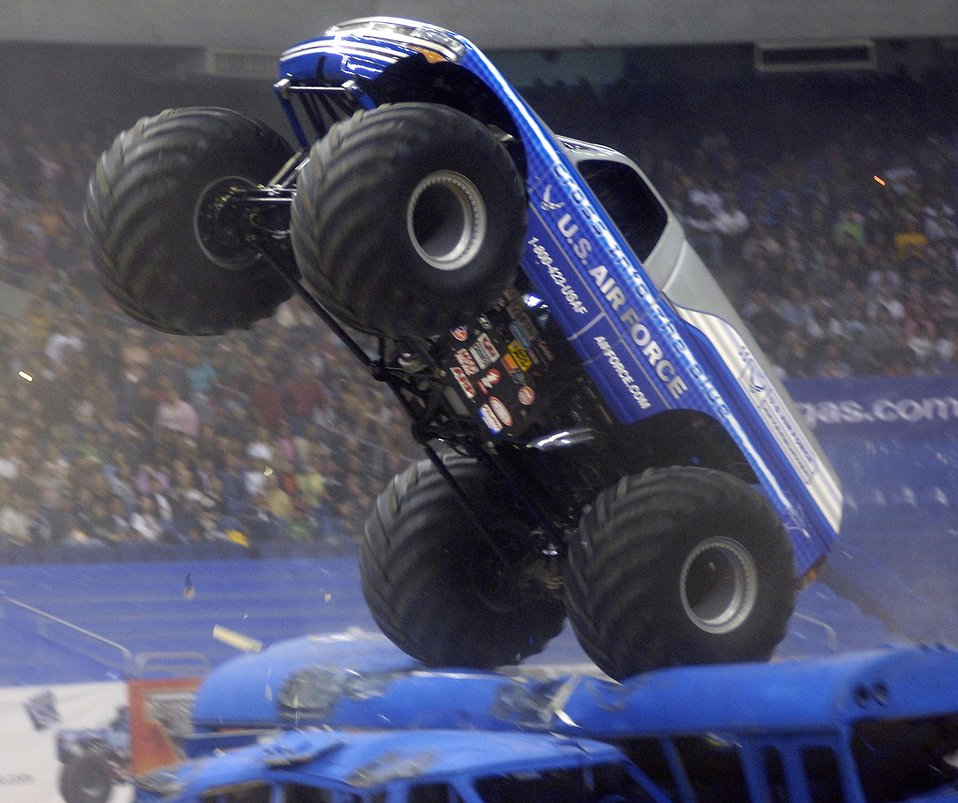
Monster recruiter

SAN ANTONIO (AFPN) -- Afterburner, the Air Force's new monster truck, jumps over some crushed cars at the San Antonio Monster Jam, Jan. 14. This is only the second race in which the truck, one of the newest Air Force recruiting tools, has competed. Afterburner, driven by Paul Cohen, made the finals Jan. 14, but was edged out by Grave Digger in the final match.